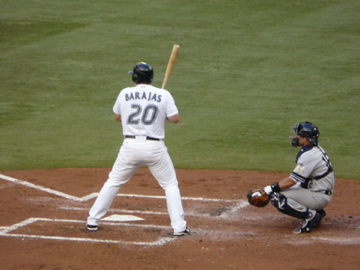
Rod Barajas
19:09, 6 September 2008 . . DinoZon . . 360×270 (47 KB)